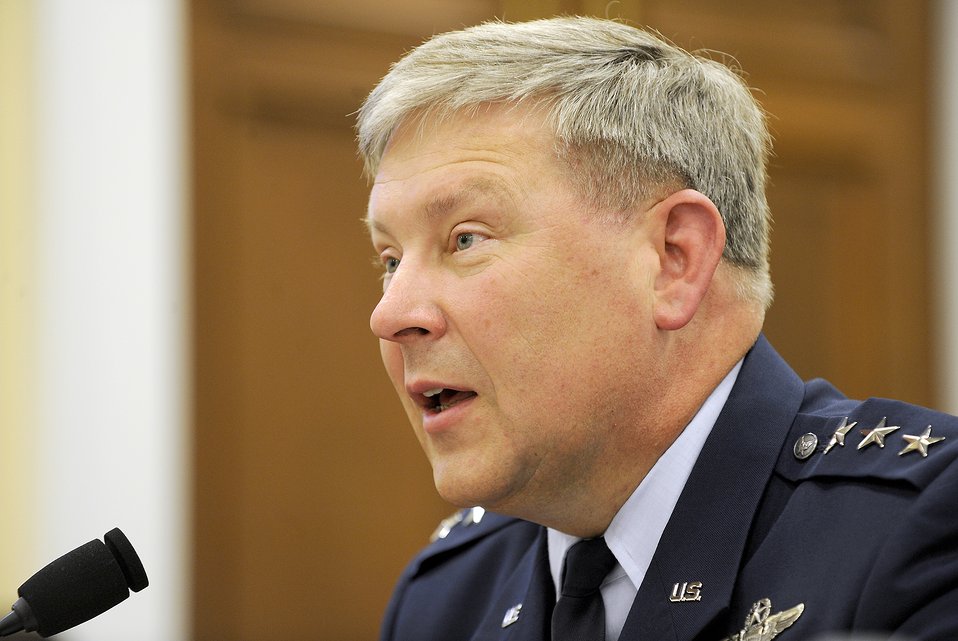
Deputy Chief of Staff tertifies

Lt. Gen. Christopher Miller, Deputy Chief of Staff for Strategic Plans and Programs, Headquarters, U.S. Air Force, testifies during a hearing before the House Armed Services Committee on Air Force aircraft force structure reductions in Washington, D.C., July 12, 2012.